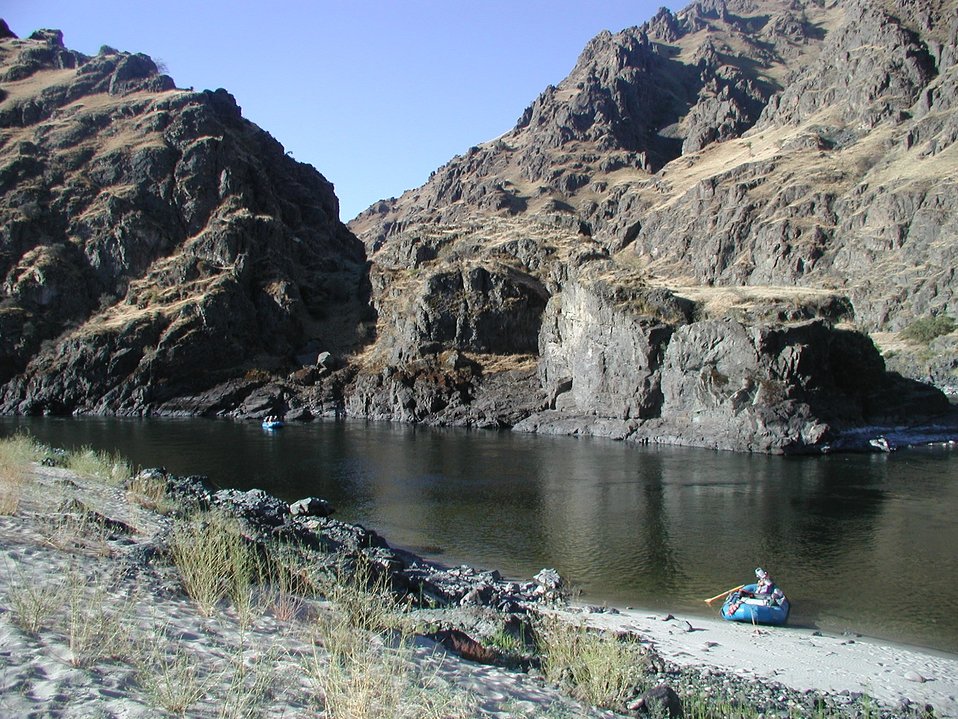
Scenic shot of Lower Salmon River Cottonwood Field Office UCSC Upper Columbia Salmon Clearwater District